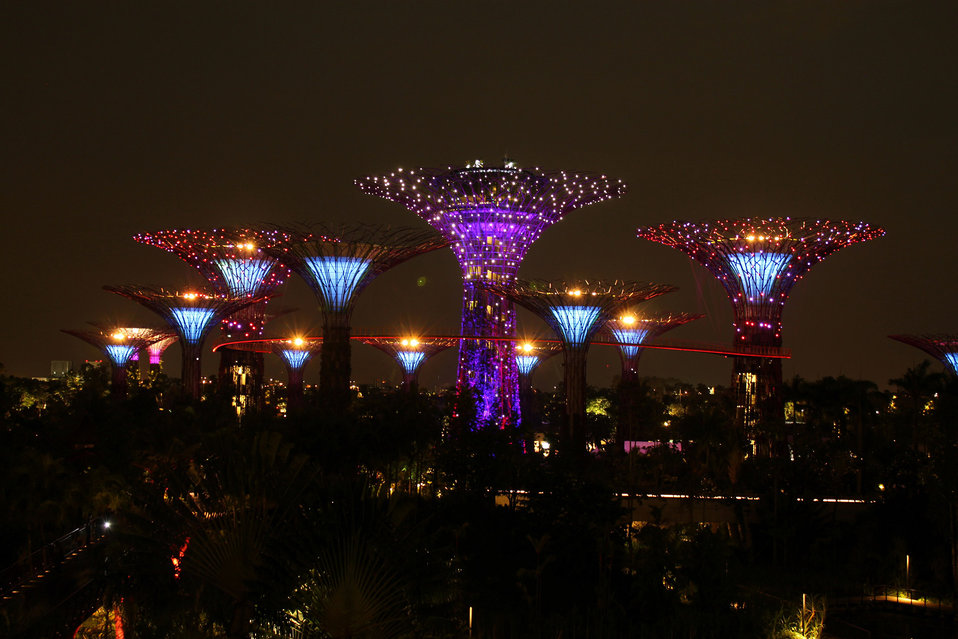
Singapore sky tree night view.